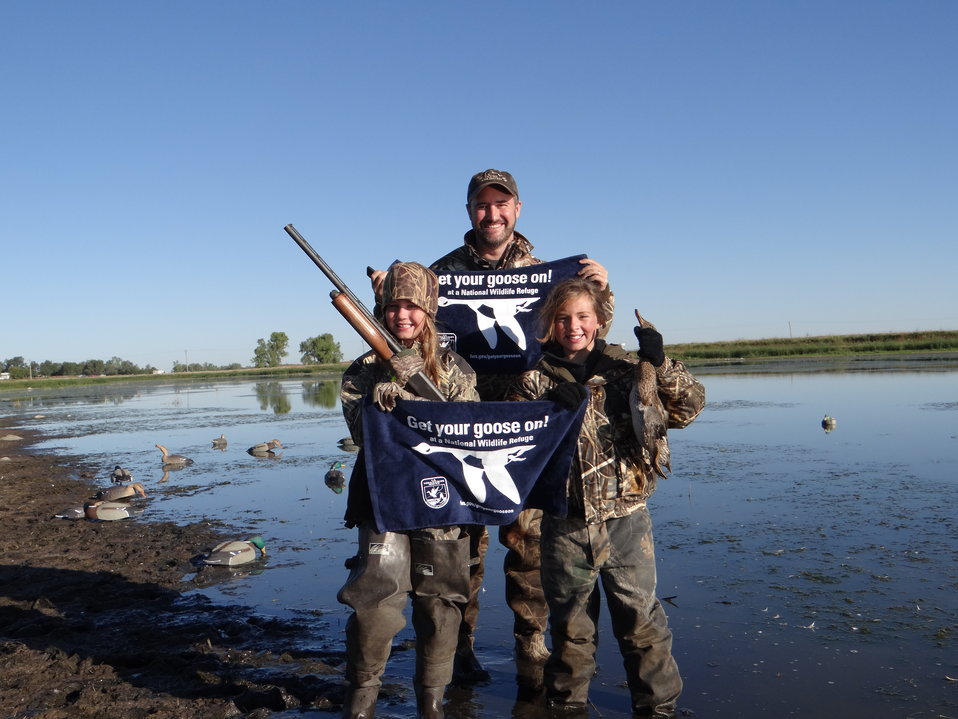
Get Your Goose On!

2013 HURON WMD YOUTH WATERFOWL HUNT. An adult Volunteer and particpants Get their Goose On! after the Youth Waterfowl hunt. The Huron Wetland Management District hosted its 10th annual Youth Waterfowl Hunt in September. This event provided 28 youth hunters between the ages of 12 – 15 and (new) mentored hunters (10-11), an opportunity to learn about various migratory birds and their habitats, duck and goose calling, decoys, and waterfowl hunting techniques. This event continues to be a success each year due to the dedicated volunteers within the community of Huron.